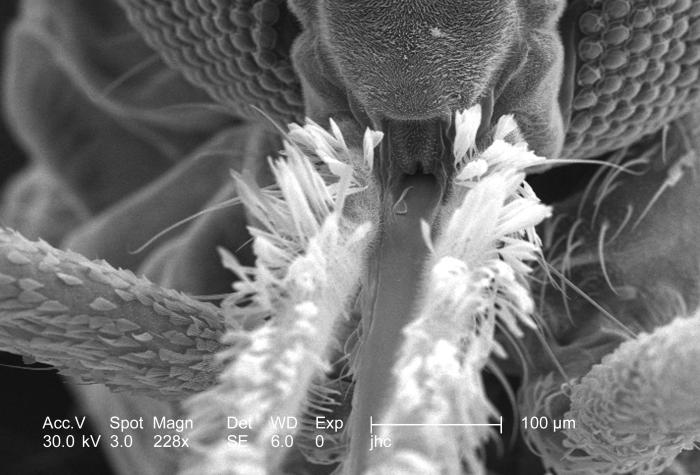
Magnified 228x, double that of PHIL 8780, this scanning electron micrograph (SEM) revealed some of the morphologic features displayed on the exoskeletal surface of an Anopheles gambiae mosquito's anterior head region. Included in this field of view was the proboscis, and two maxillary palps, the clypeus, to which the aforementioned structures are attached, and two bilateral multifaceted compound eyes.